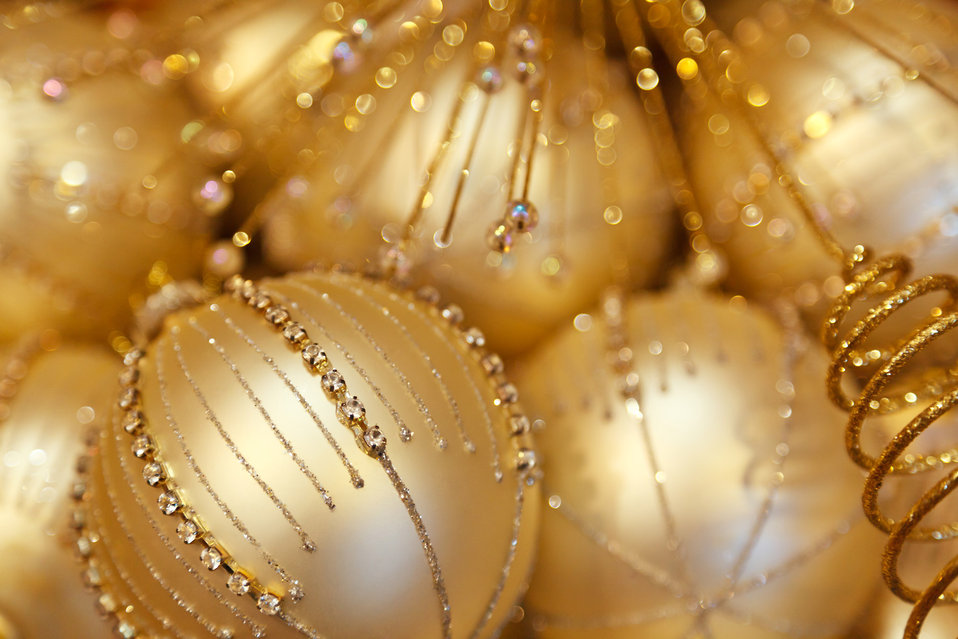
Golden christmas balls

Golden christmas bauble decoration.